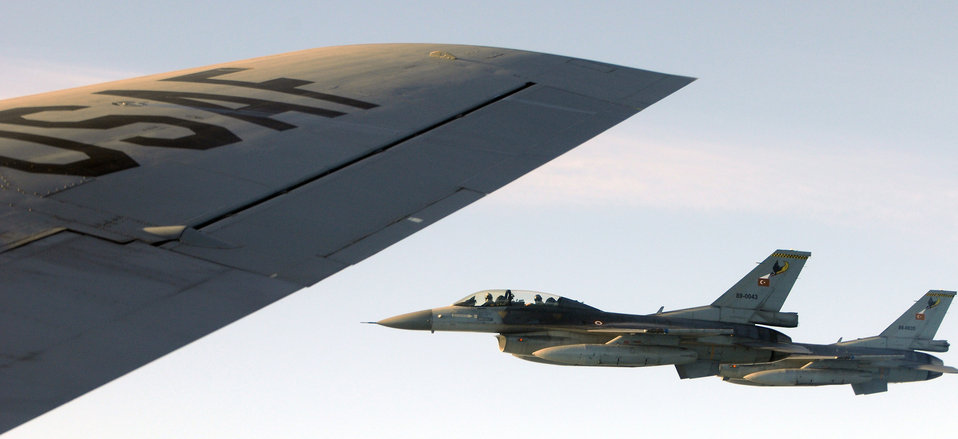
Allied nations support

Two Turkish F-16s fly alongside a U.S. Air Force KC-135 Stratotanker over the North Sea during a refueling mission Sept. 23, 2009, in support of Exercise Bold Avenger 2009 held at Karup Air Base, Denmark. The KC-135 from Royal Air Force Mildenhall, England, refueled 18 F-16s from allied air forces, delivering more than 99,000 pounds of jet fuel.